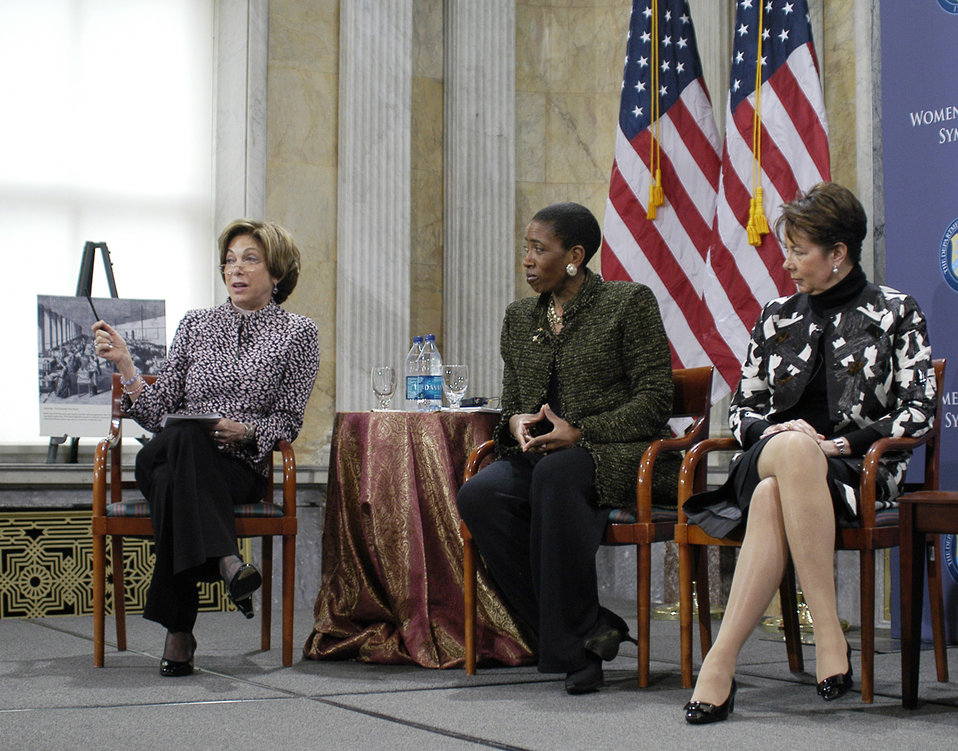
Women in Finance Symposium, 03/29/2010

Advisory Board member for the President’s Economic Recovery Laura Tyson, Director in the Strategic Client Group of Morgan Stanley Carla A. Harris and Citi Personal Wealth Management CEO Deborah McWhinney at the Women in Finance Symposium at Treasury on March 29, 2010.